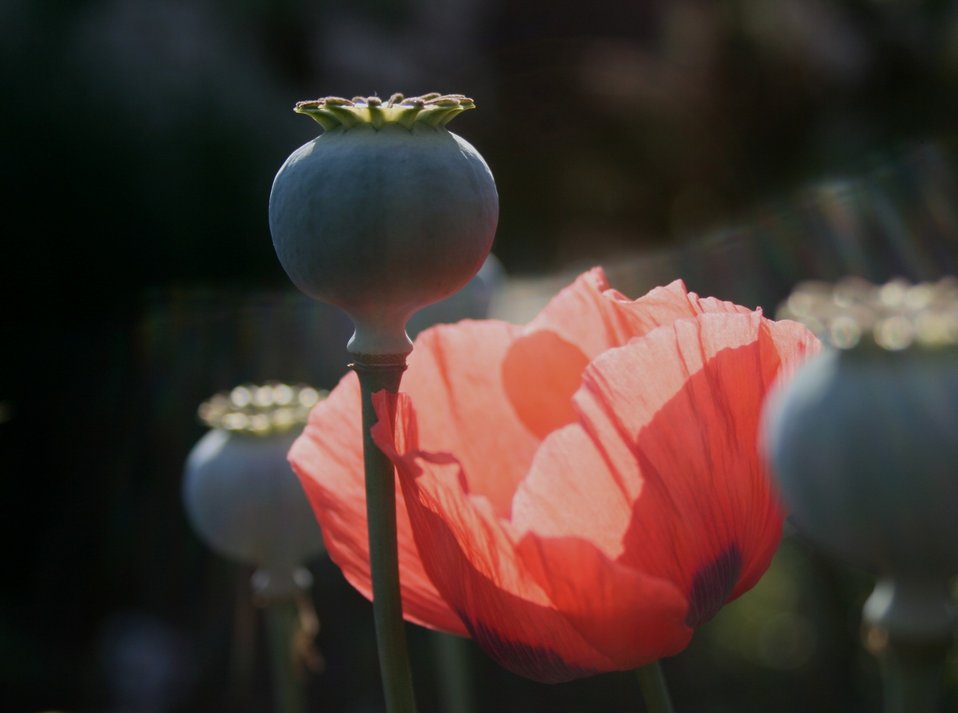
Poppy pod and red poppy

Flowering red poppy and seed pods.